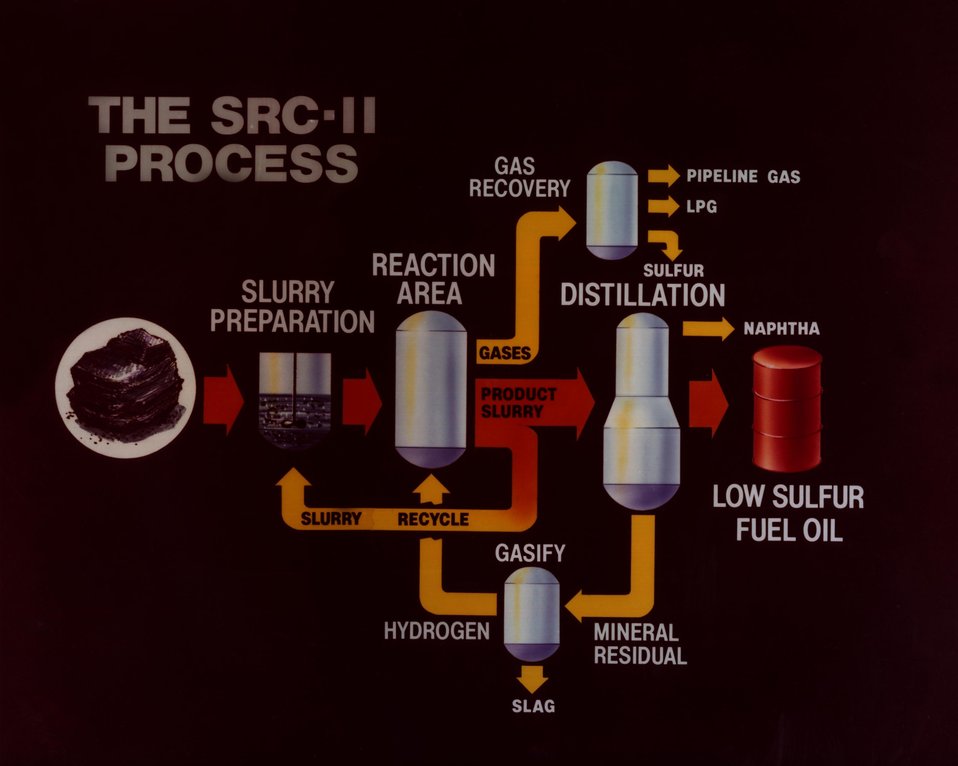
PART IV OF A FLOW DIAGRAM ILLUSTRATING THE SRC-II PROCESS.